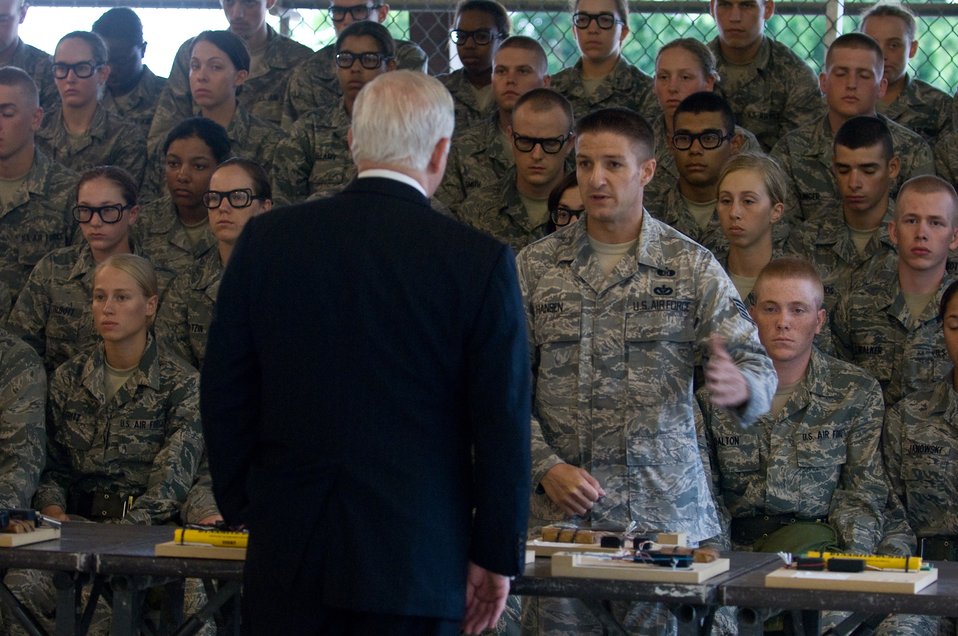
SECDEF visits Airmen, tour BMT facilities

Secretary of Defense Robert M. Gates receives a briefing about the Improvised Explosive Device training given to basic trainees during a visit to Lackland Air Force Base, Texas, July 24.